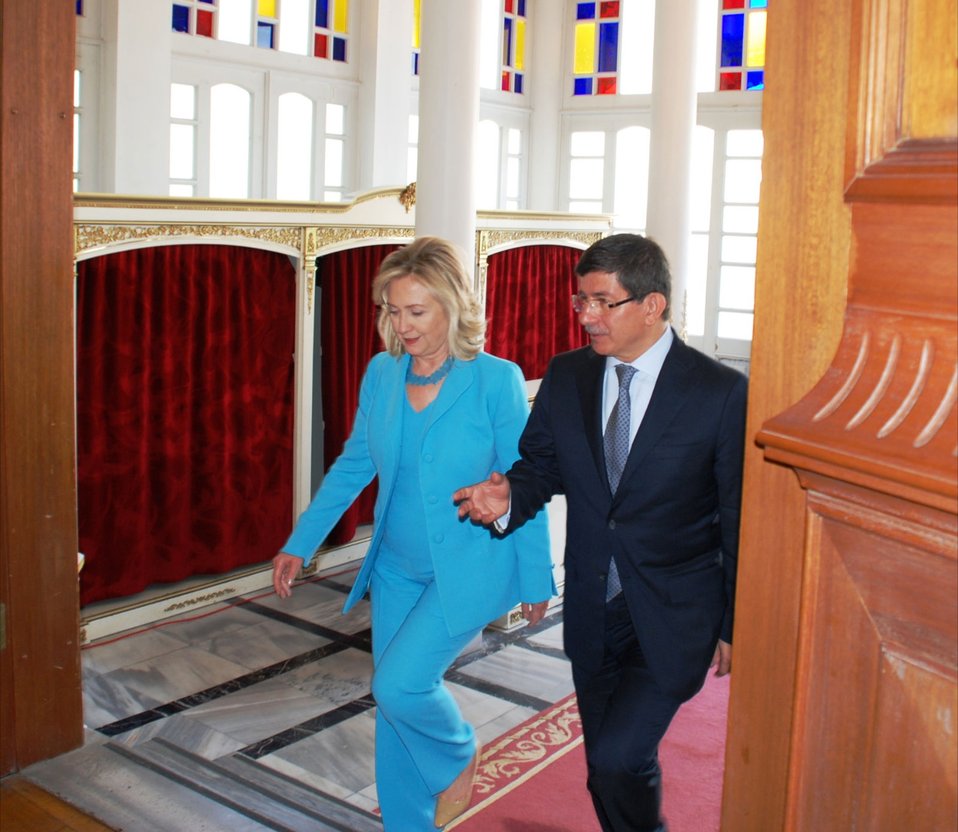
Secretary Clinton and Turkish Foreign Minister Davutoglu Walk to a Press Conference

U.S. Secretary of State Hillary Rodham Clinton and Turkish Foreign MInister Ahmet Davutoğlu walk to a joint press conference after their bilateral meeting in Istanbul, Turkey, on July 16, 2011.